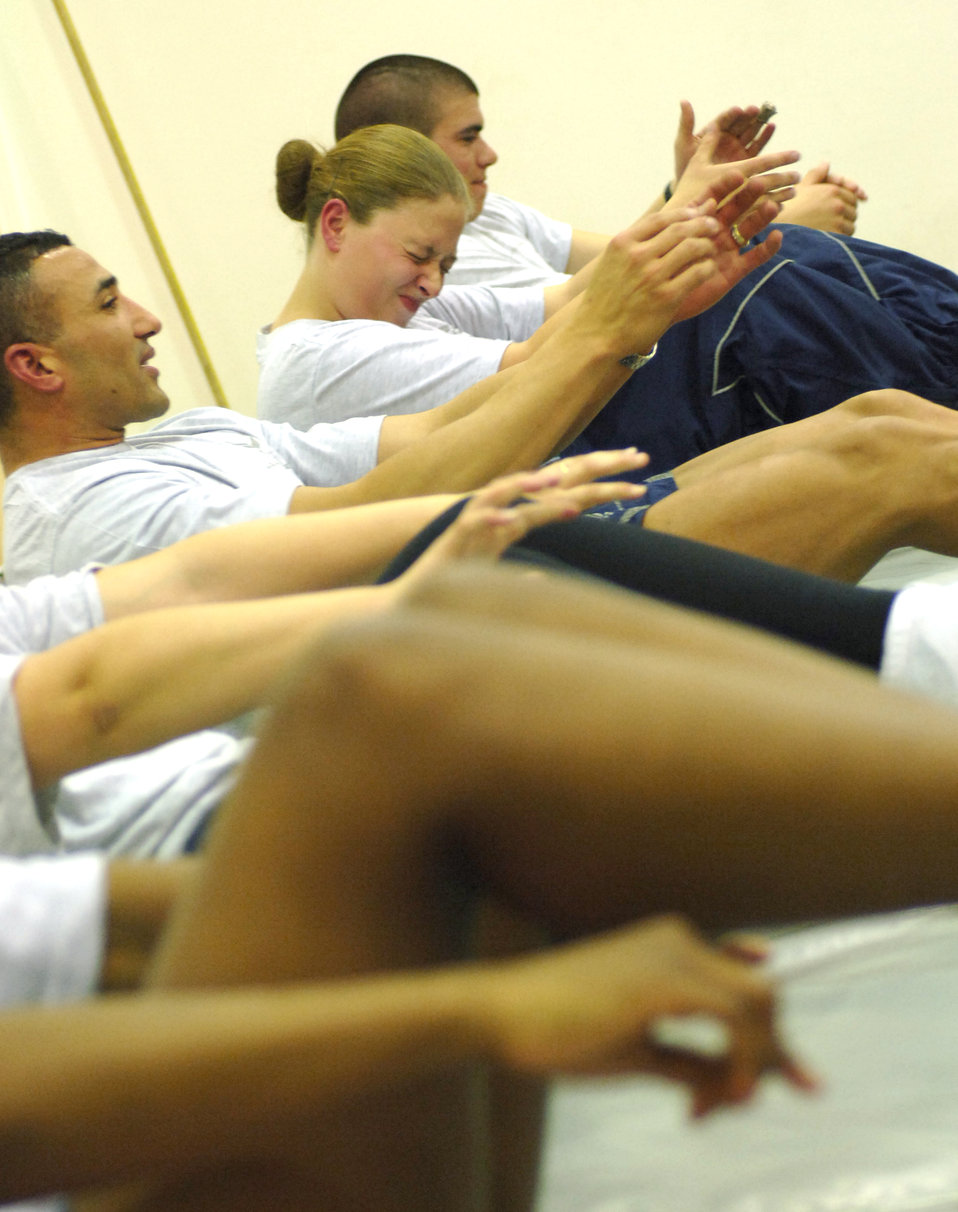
Airmen, Soldiers get to core of crunches

Airman 1st Class Nathan Doza and Senior Airman Jose Meija stretch out after participating in an intense abs class Feb 13 in the gym at Balad Air Base, Iraq. Airmen Doza and Meija are assigned to the 332nd Expeditionary Communications Squadron.